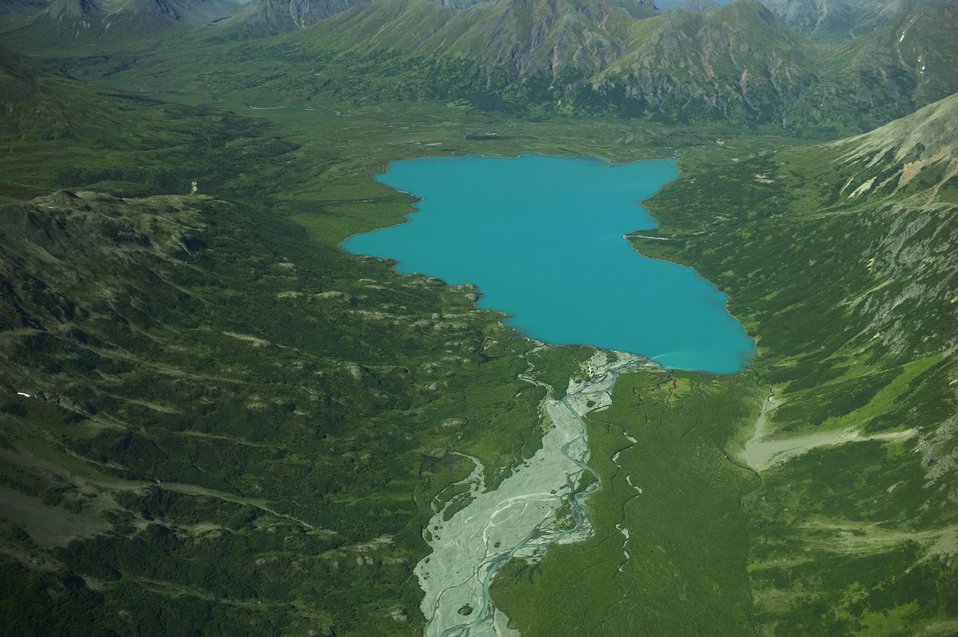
Togiak Nation Wildlife Refuge